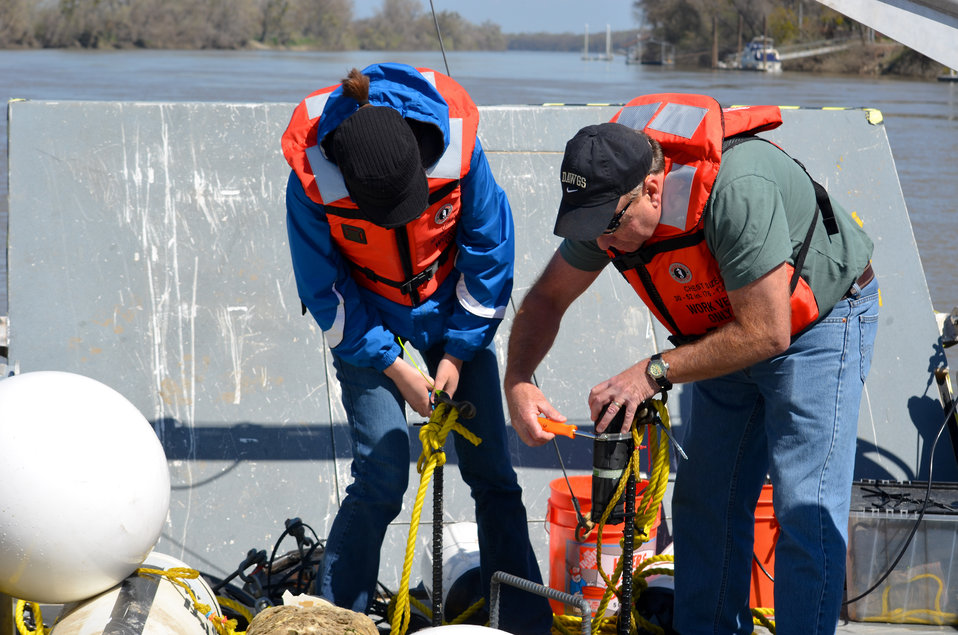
Preparing an acoustic receiver for underwater testing

Senior fish biologist Brian Mulvey (right) and environmental specialist Natalie Houghton with the U.S. Army Corps of Engineers Sacramento District prepare an acoustic receiver for underwater testing in the Sacramento River near Sacramento, Calif., March 21, 2012. The Corps uses the receivers to evaluate habitat restoration work under its Sacramento River Bank Protection Project. A joint effort between the Sacramento District and the California Central Valley Flood Protection Board, the project repairs river bank erosion along the Sacramento River and its tributaries to reduce flood risk. The Corps restores habitat after its repair work and continually monitors fish behavior near the repair sites to ensure the health of the habitat.